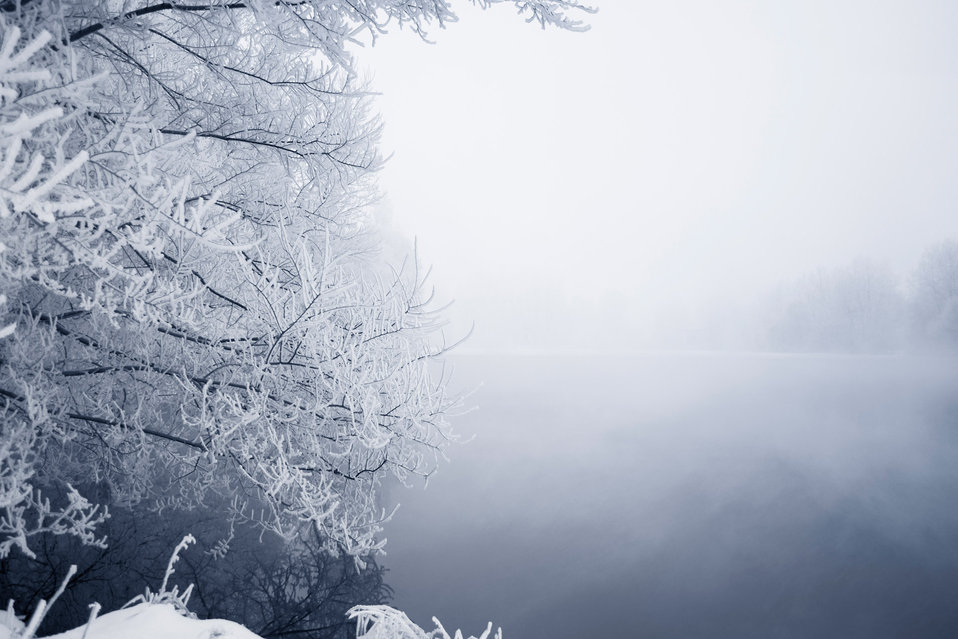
This winter

Snowy winter, all in a fog and snow..